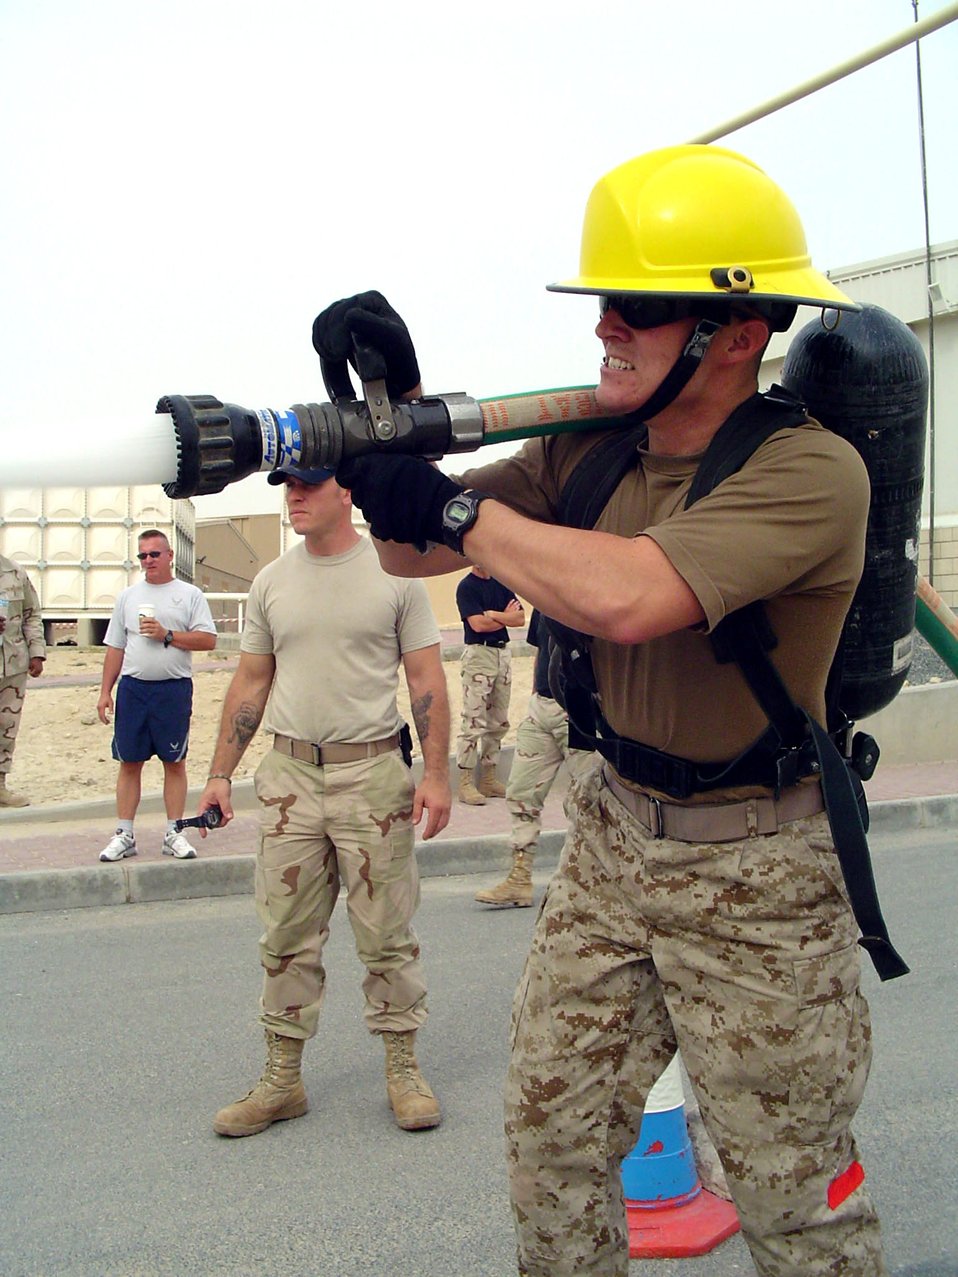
Firefighter Challenge

A Marine shoots water through a high-pressure hose in the individual challenge course during the Firefighter Challenge in Southwest Asia on Thursday, May 4, 2006. More than 36 Airmen, Marines and Soldiers participated in the event, which was hosted by the 386th Air Expeditionary Wing fire and emergency services flight. Individual and team events included climbing a 40-foot tower to hoist a 40-pound hose and dragging a 135-pound dummy 100 feet.